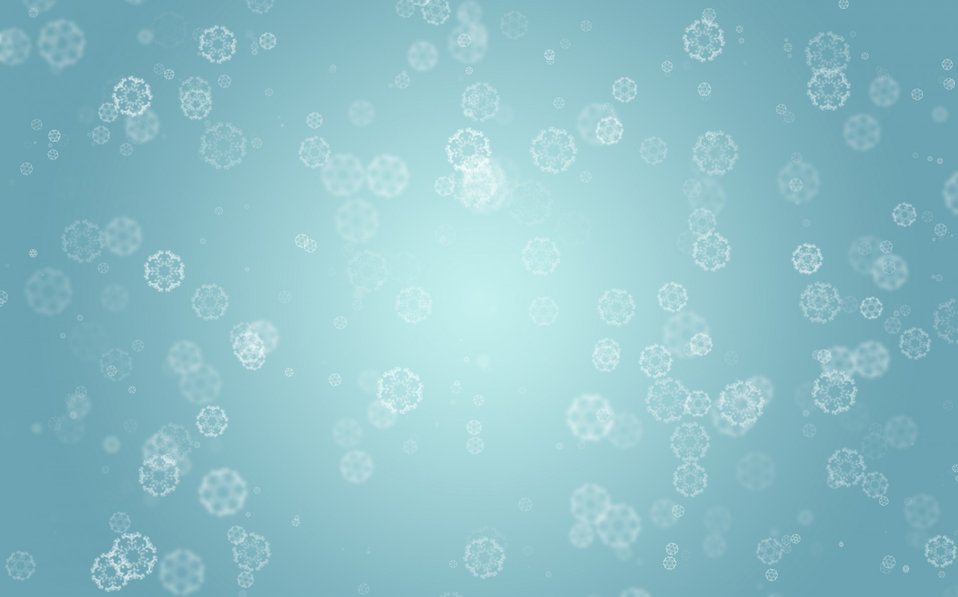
Snow flakes background

Snow flakes on blue background.